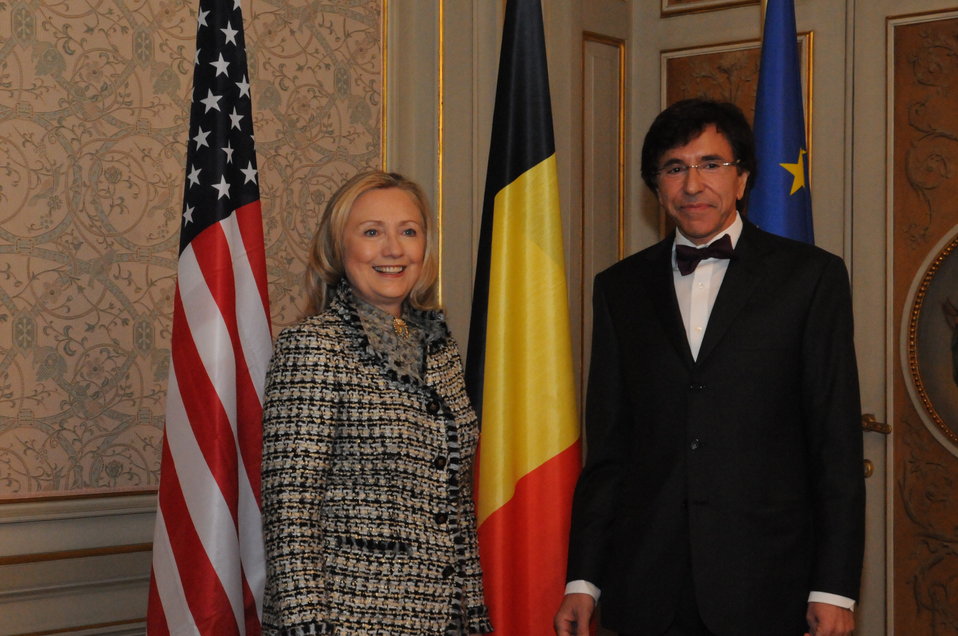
Secretary Clinton Meets With Belgian Prime Minister Di Rupo

U.S. Secretary of State Hillary Rodham Clinton meets with Belgian Prime Minister Elio Di Rupo at his residence in Brussels, Belgium, on April 18, 2012.